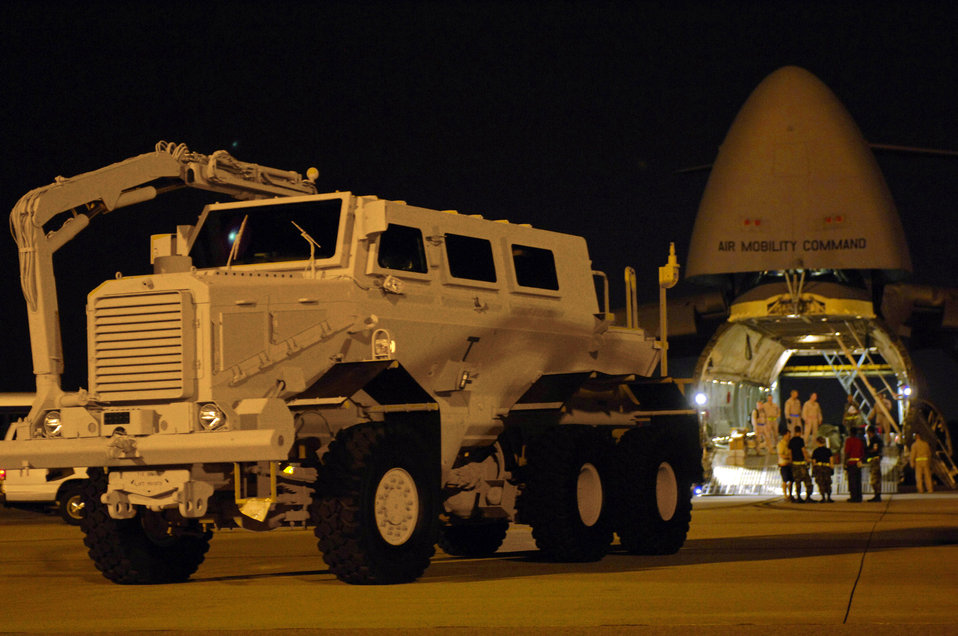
A tight fit

Airmen prepare to load a mine-resistant ambush-protected vehicle into a C-5 Galaxy at Charleston Air Force Base, S.C., Aug. 16 for shipment to Iraq.